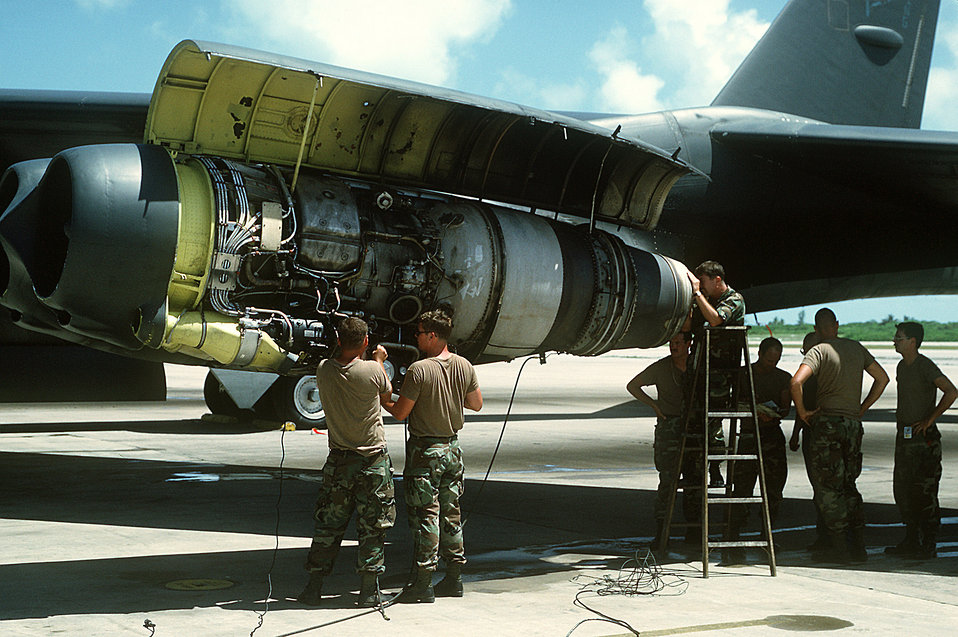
B-52G Stratofortress

1990's -- Ground crew members perform maintenance on an engine of a B-52G Stratofortress aircraft during Operation Desert Shield.